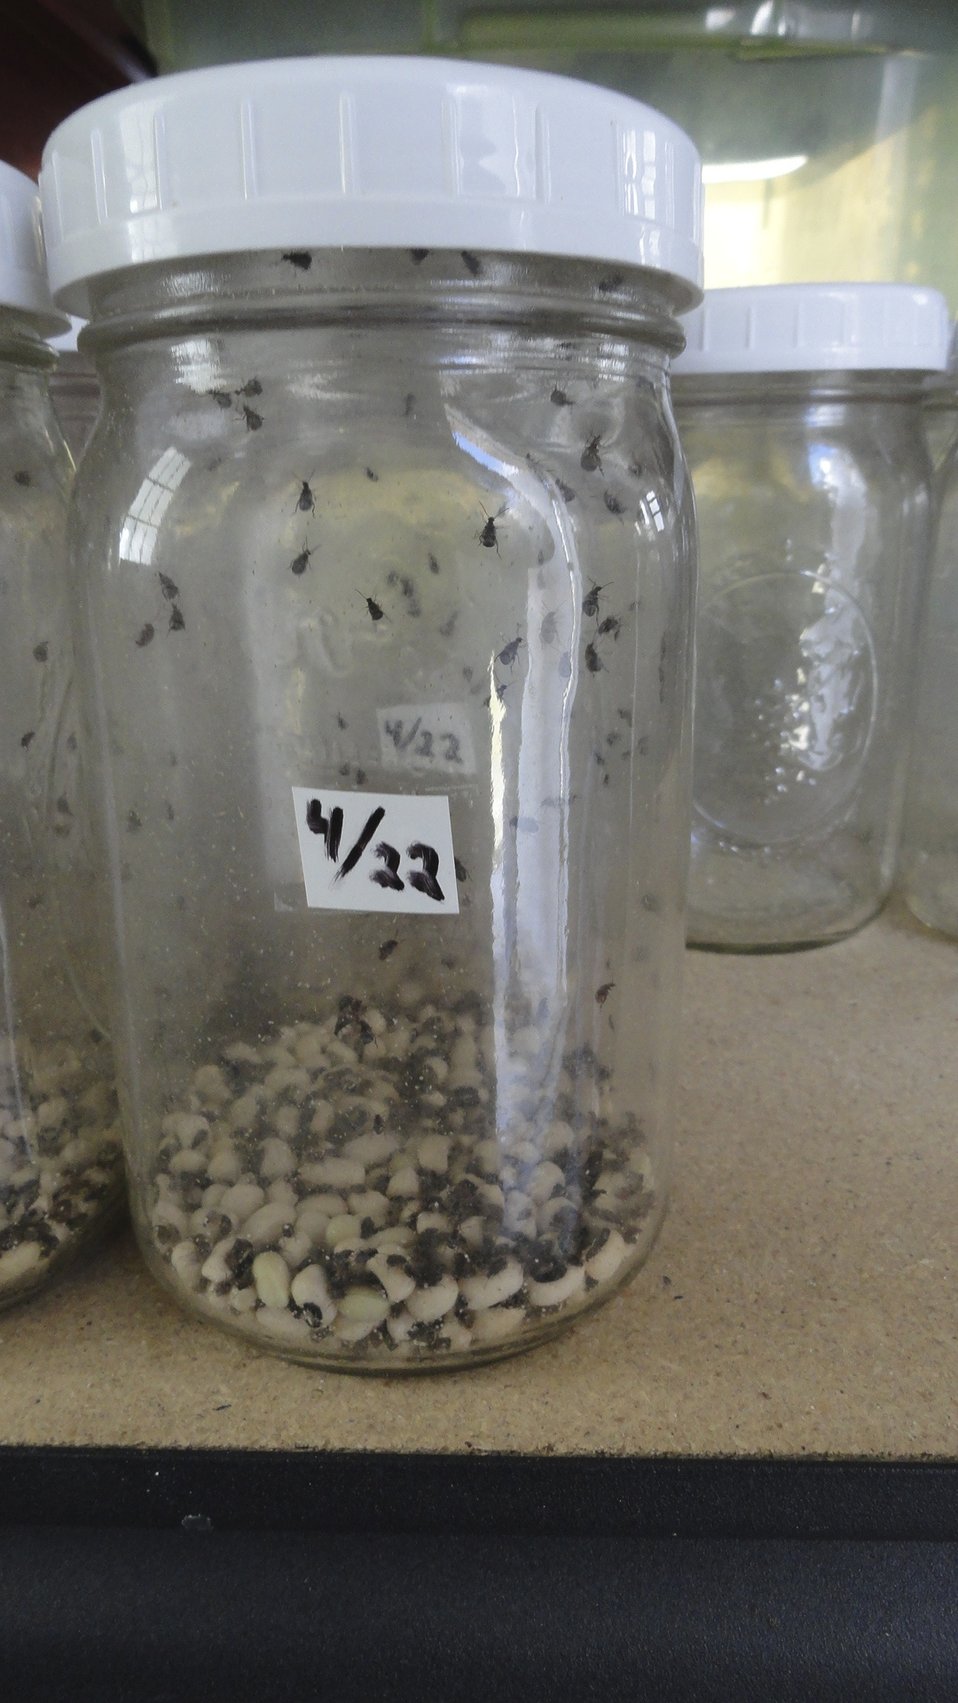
Visiting Saratoga National Fish Hatchery

In April of 2014, regional office employees visited Saratoga National Fish Hatchery to learn more about its efforts towards recovering the Wyoming toad (Bufo baxteri).

The hatchery adopted a unique role in becoming the first unit in the National Fish Hatchery System to become involved in rearing endangered amphibians. The Wyoming toad was a common sight on areas of the Laramie Plains, Albany County, Wyoming, into the early 1970s but the species' populations crashed in the mid-1970s. The Wyoming toad was listed as endangered by the U.S. Fish & Wildlife Service in January 1984. Found only in southwestern Wyoming, the Wyoming toad is considered the most endangered amphibian in North America. The hatchery maintains a captive population for breeding, rearing, and refugia, and the offspring from this program will be used for reintroduction efforts.